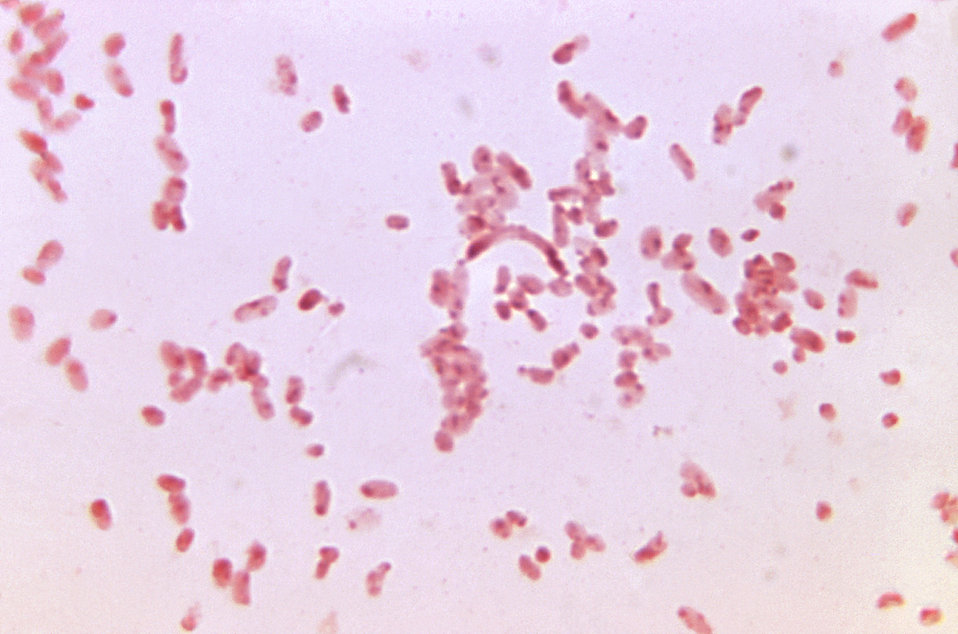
This photomicrograph shows Fusobacterium mortiferum after being cultured in a thioglycollate medium for 48 hours.